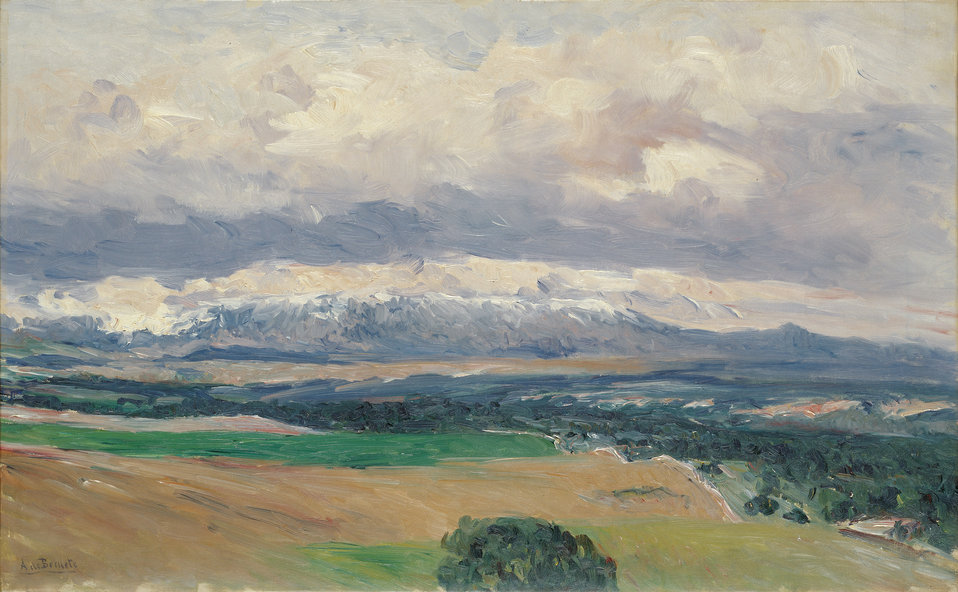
View of the Sierra de Guadarrama from El Plantío. Oil on canvas, 48.7 x 78 cm, Inv. CTB.1999.21 Museo Carmen Thyssen Native name Museo Carmen Thyssen Location Málaga, Spain Coordinates 36° 43′ 17″ N, 4° 25′ 22″ W Established 2011 Website www.carmenthyssenmalaga.org